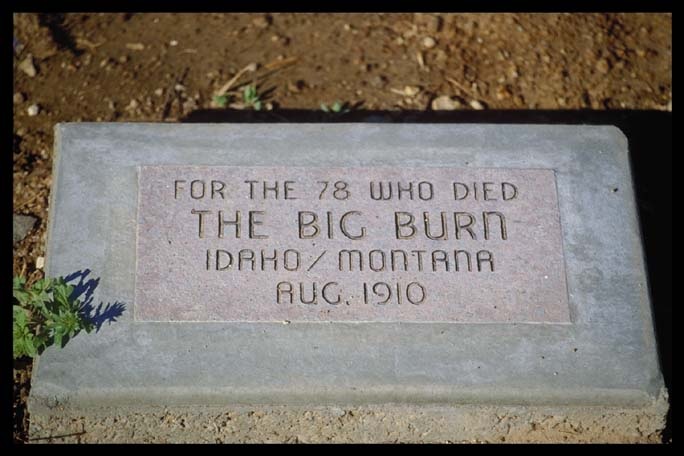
Monument brick